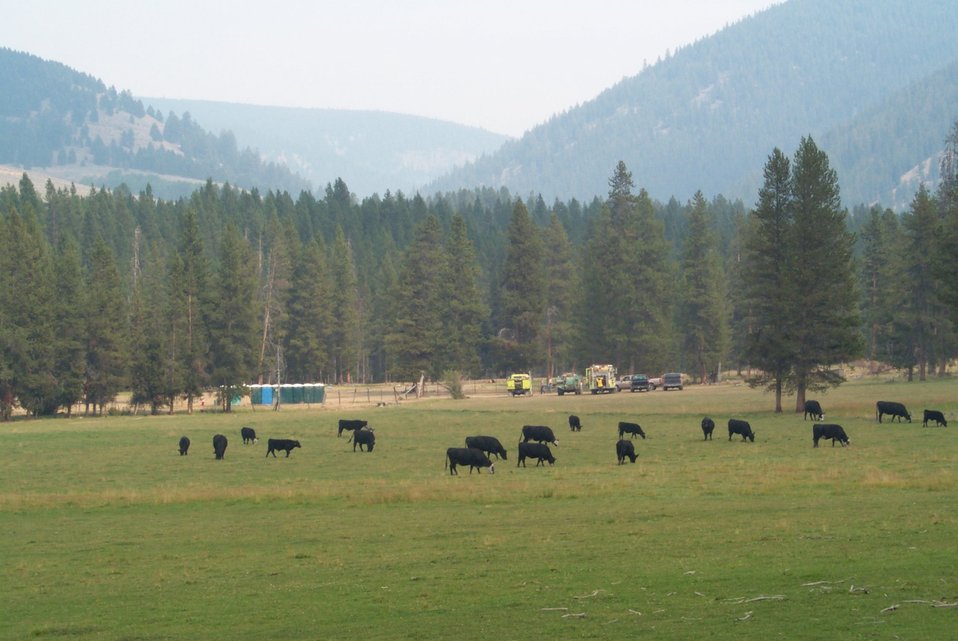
Camp Fire Clearwater Fire Salmon Field Office USRD Upper Snake River District